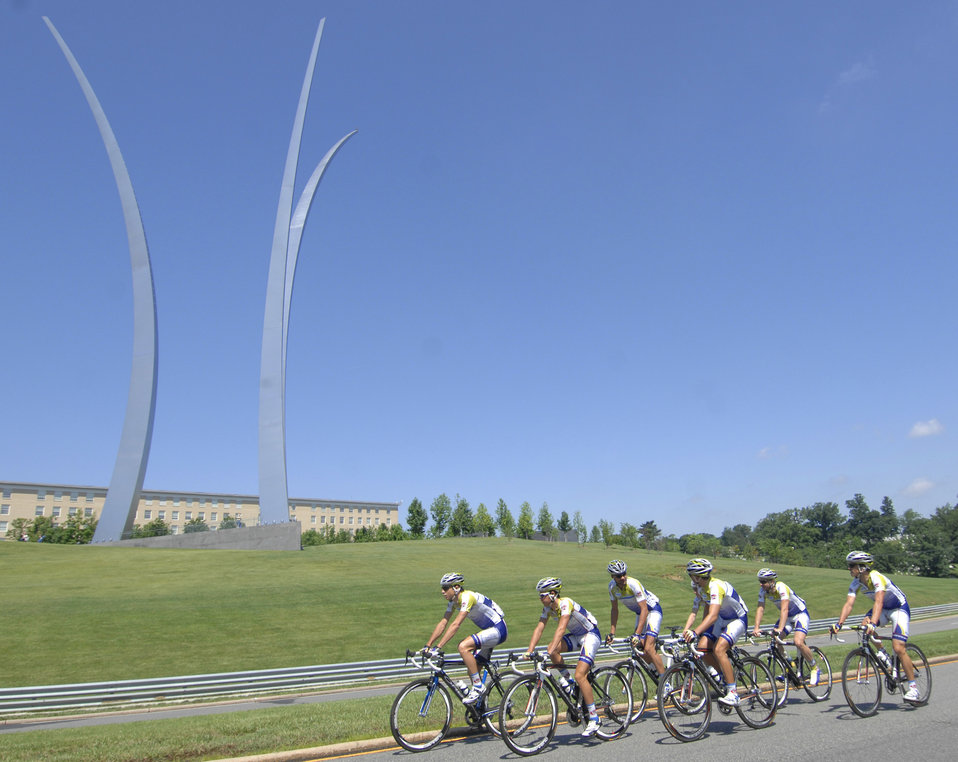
Bikers raise money for wounded warriors during Cycling Classic

Riders pass the Air Force Memorial during the 2009 Air Force Cycling Classic May 31 in Arlington, Va. Nearly 1,000 professional and amateur riders participated in the annual, two-day bicycling event, raising $34,500 for the Intrepid Fallen Heroes Fund charity.